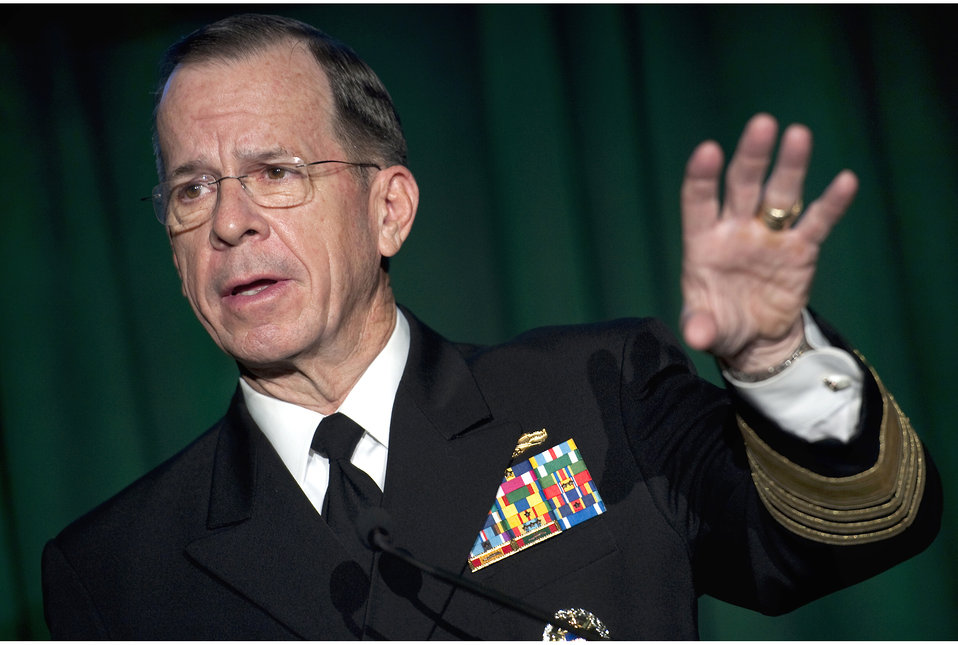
Programs suffer Mullen says

Navy Adm. Mike Mullen, the chairman of the joint chiefs of staff, addressed the House Armed Services Committee about the fical 2011 defense budget Feb. 16, 2011, in Washington.